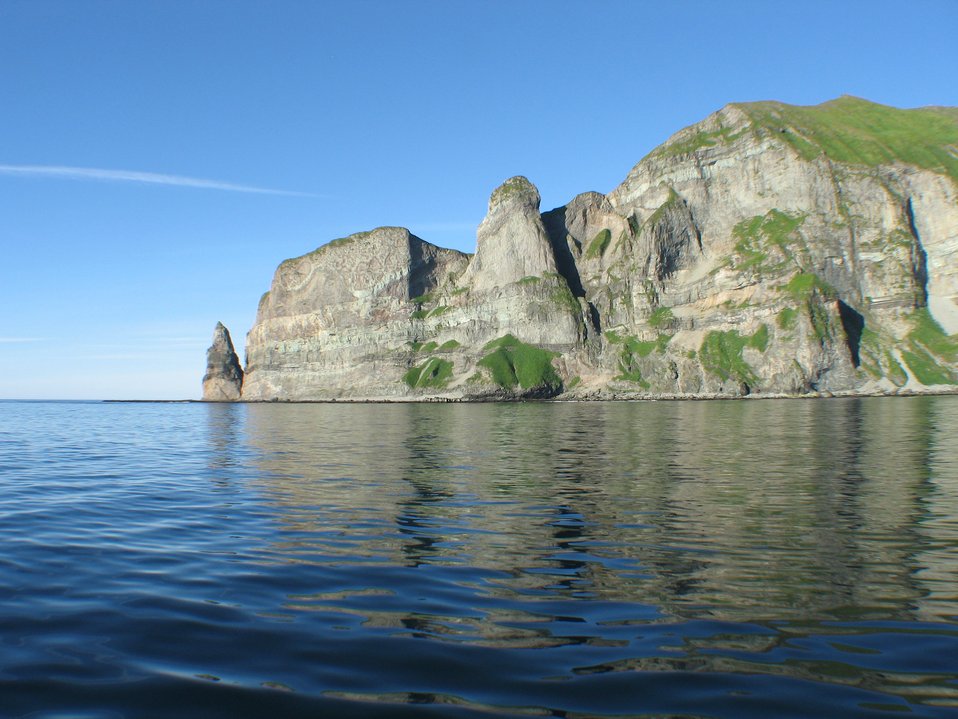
Cape Prominence on the south side of Unalaska Island